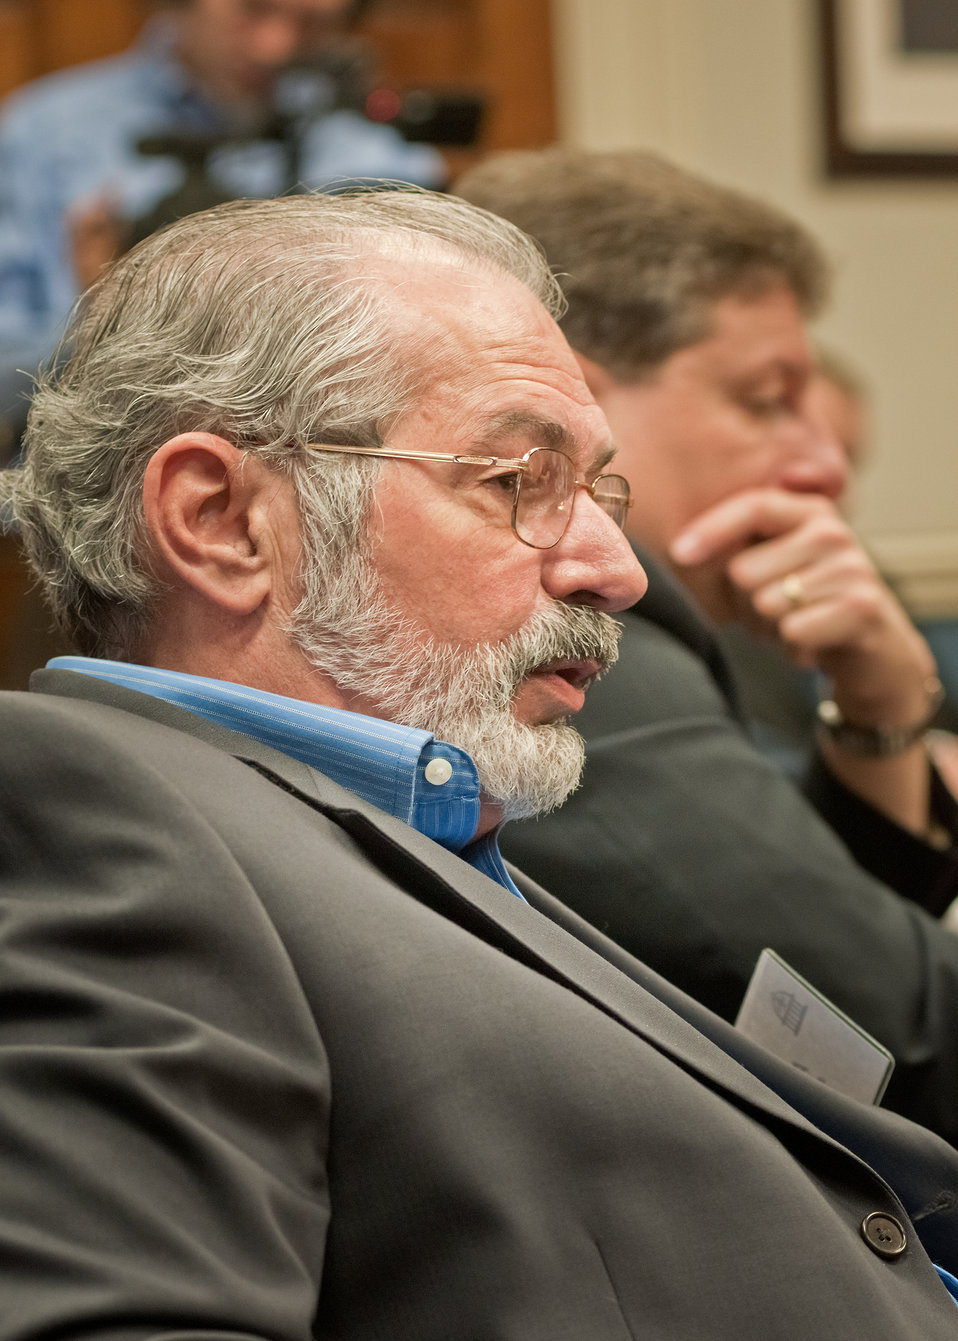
Alan Jarrand, Radio Director, RFD Radio, Bloomington, Illinois and Troy Leininger, KICD-AM&FM, Spencer, Iowa members of the National Association of Farm Broadcasters listen to Agriculture Secretary Tom Vilsack at the United States Department of Agriculture during the annual National Association of Farm Broadcasters visit to Washington, DC, on Tuesday, May 5, 2011.